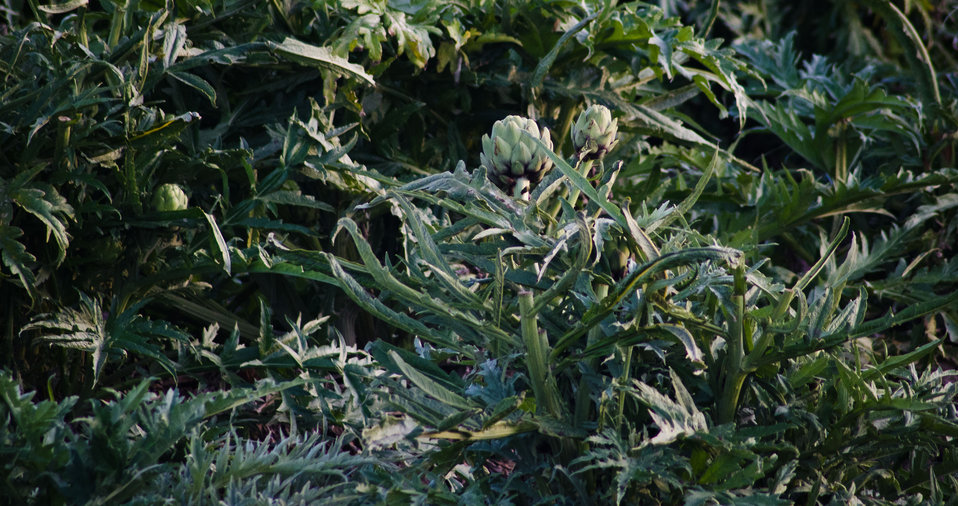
Artichoke farm in Castroville, CA, on Thursday, June 16, 2011.